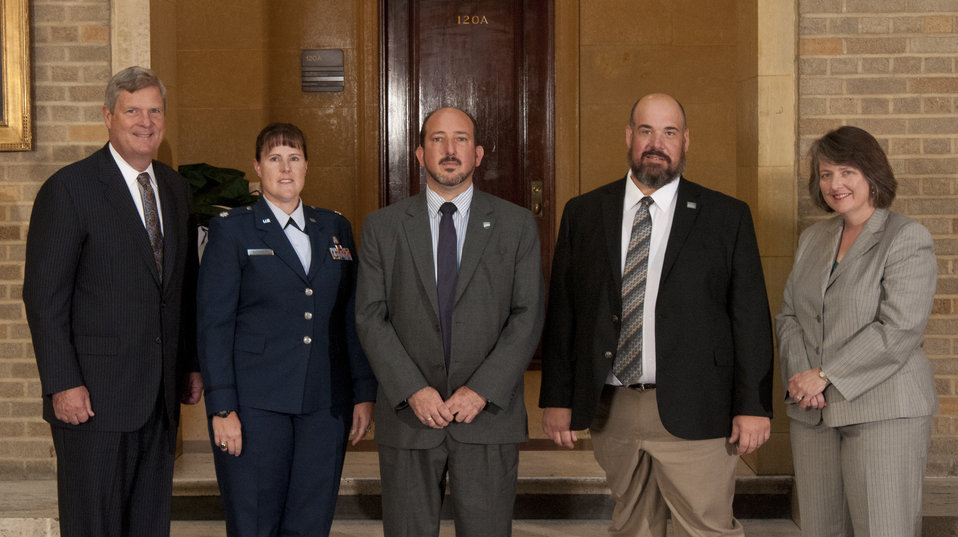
Agriculture Secretary Tom Vilsack and Deputy Agriculture Secretary Kathleen Merrigan with Honor Award Group Airport Wildlife Hazards Programs Southeast Asia, Animal and Plant Health Inspection Service (APHIS) on the patio of the U.S. Department of Agriculture in Washington, D.C. on Wednesday, Sept. 12, 2012. The Airport Wildlife Hazards Programs - Southwest Asia Team received their award for the USDA Airport Wildlife Hazards Program- Southwest Asia Group’s efforts to mitigate wildlife strikes to aviation in Iraq and Afghanistan during “Operation Enduring Freedom.”